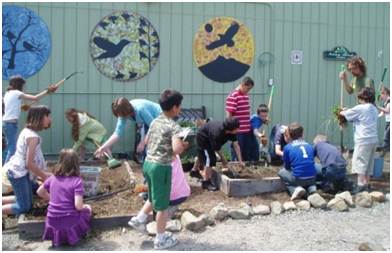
Children and Nature Gold Street School, Yreka

Students at Gold Street Elementary prepare the school’s garden beds for planting by removing weeds and adding fresh soil.